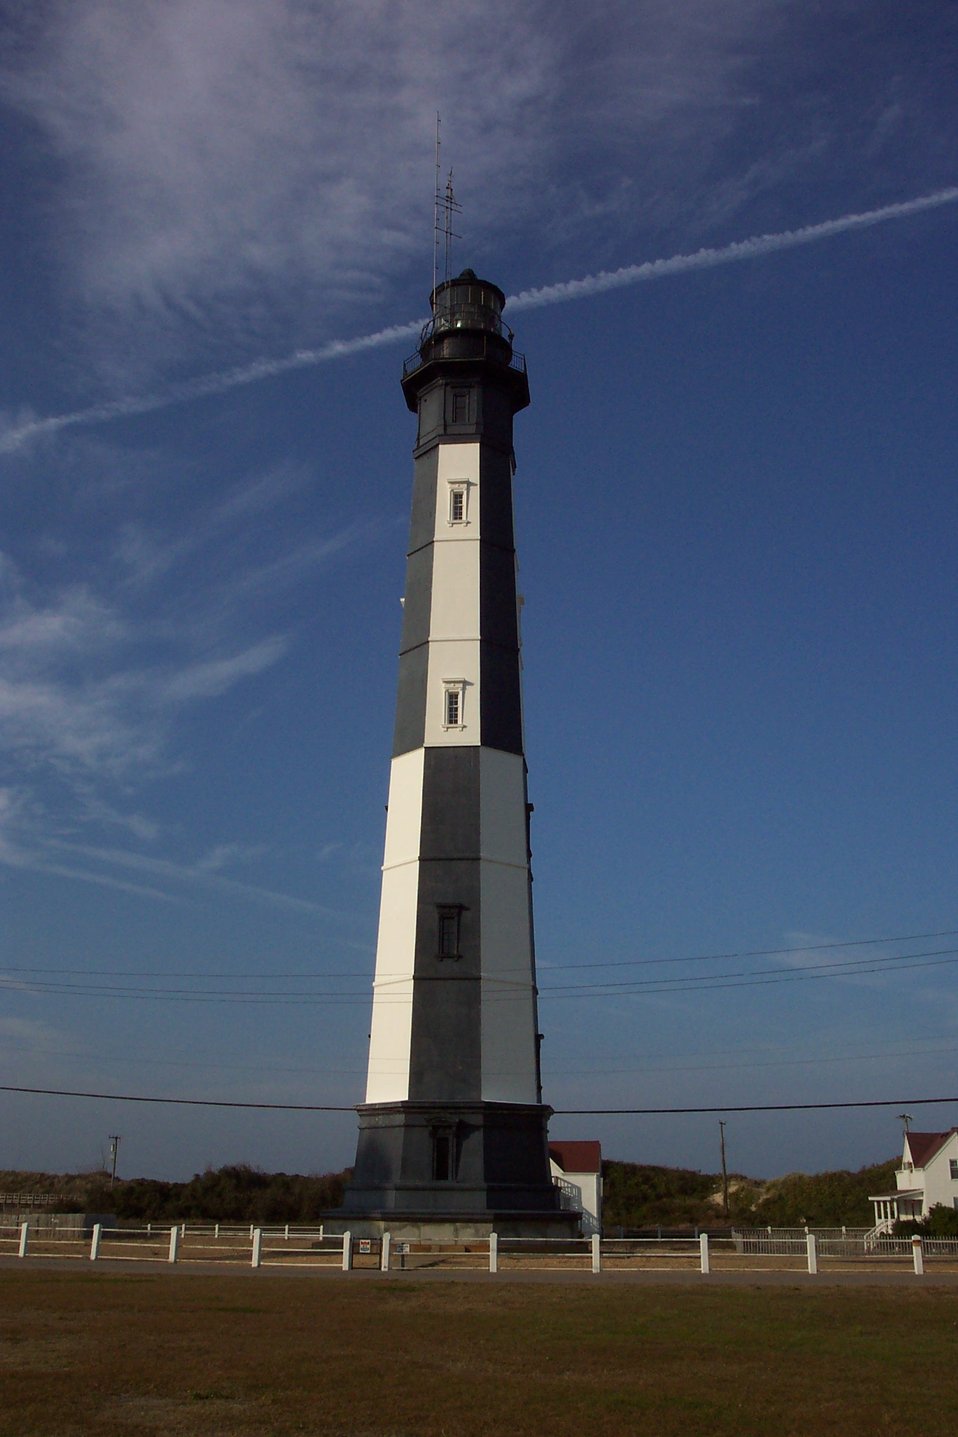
Cape Henry Lighthouse.